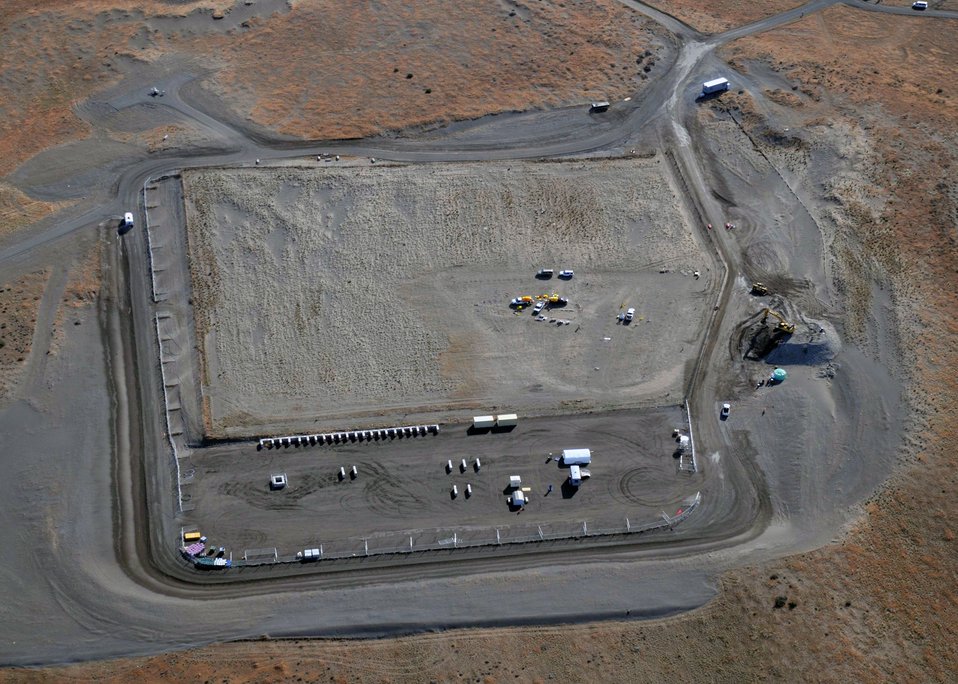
Hanford demolition